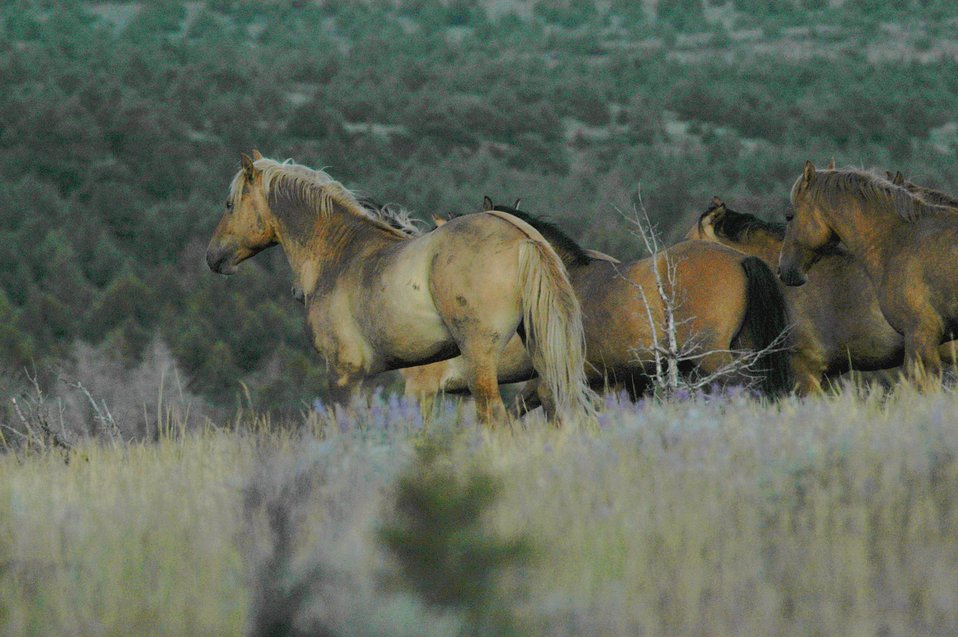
Kiger horses roam the plateaus of the Kiger Wildhorse Herd Management Area near Steens Mountain in Southeastern Oregon.